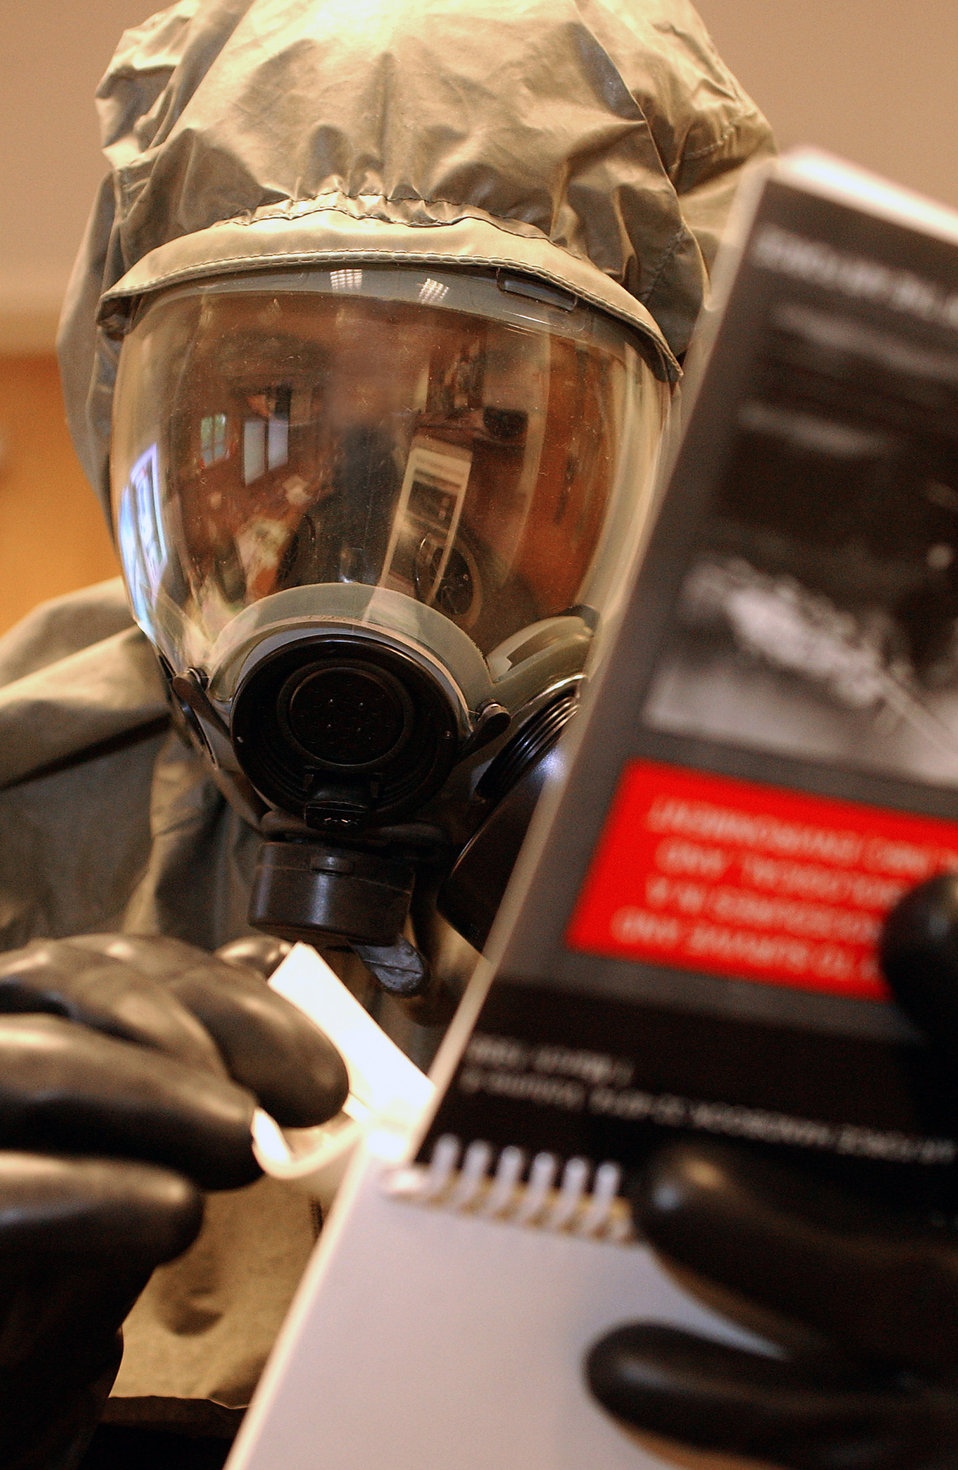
Hmmm! How do I ....?

ROYAL AIR FORCE MILDENHALL, England -- Staff Sgt. Jason Arnold refers to his Ability to Operate and Survive Handbook during a simulated chemical attack here April 28. Sergeant Arnold is a member of the 100th Communications Squadron. The purpose of the exercise was to train base personnel to perform their primary duties while under extreme threat conditions.